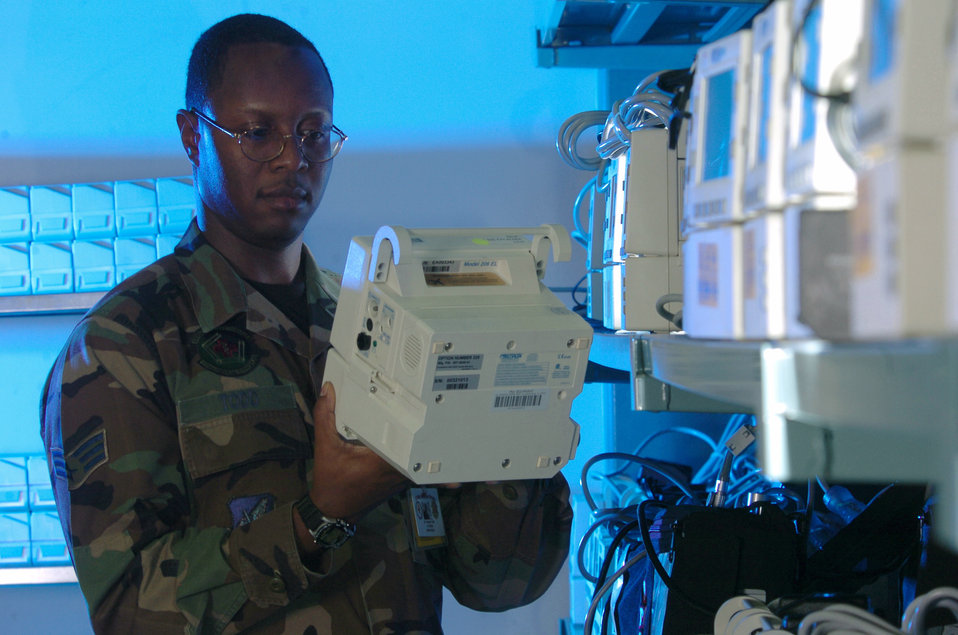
Medical maintainers

YOKOTA AIR BASE, Japan -- Senior Airman Jacques Todd inspects a vital-signs monitor during routine maintenance. Airman Todd is a biomedical equipment technician for the 374th Medical Support Squadron's medical equipment repair center element here. The element staff is responsible for acquiring, installing, maintaining and disposing of medical equipment for the base's 374th Medical Group. They also provide intermediate equipment maintenance for various bases throughout the Pacific region.